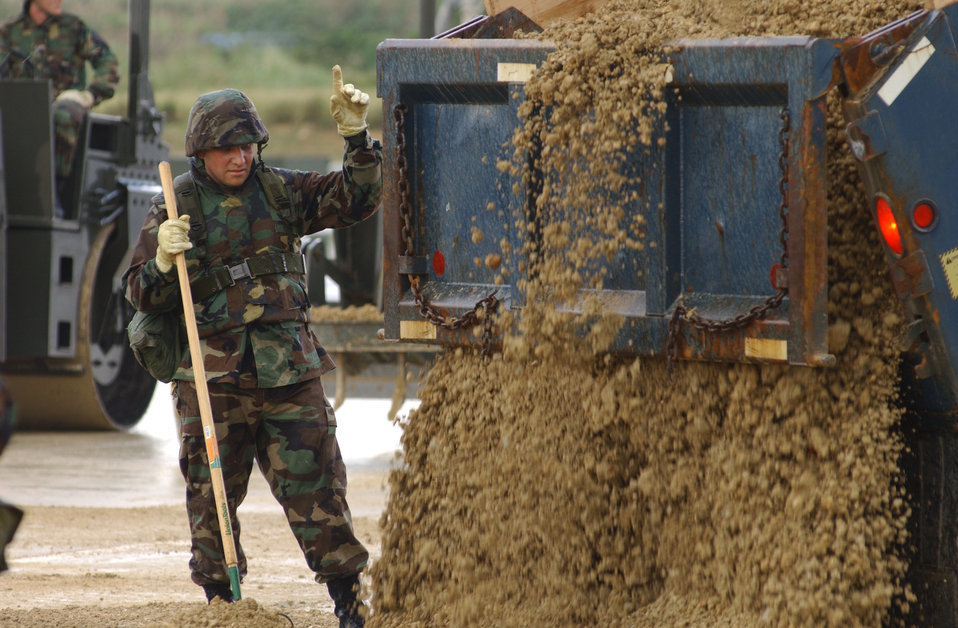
Commander's Cup Competition

KADENA AIR BASE, Japan -- Staff Sgt. James Crosley directs a dump truck to pour dirt for use during the Commander's Cup Competition here Oct. 25. The competition tests the abilities of civil engineer teams from the Air Force, Navy and Marine Corps to repair airfield damage caused by simulated mortar attacks. Sergeant Crosley is assigned to the 18th Civil Engineer Squadron.